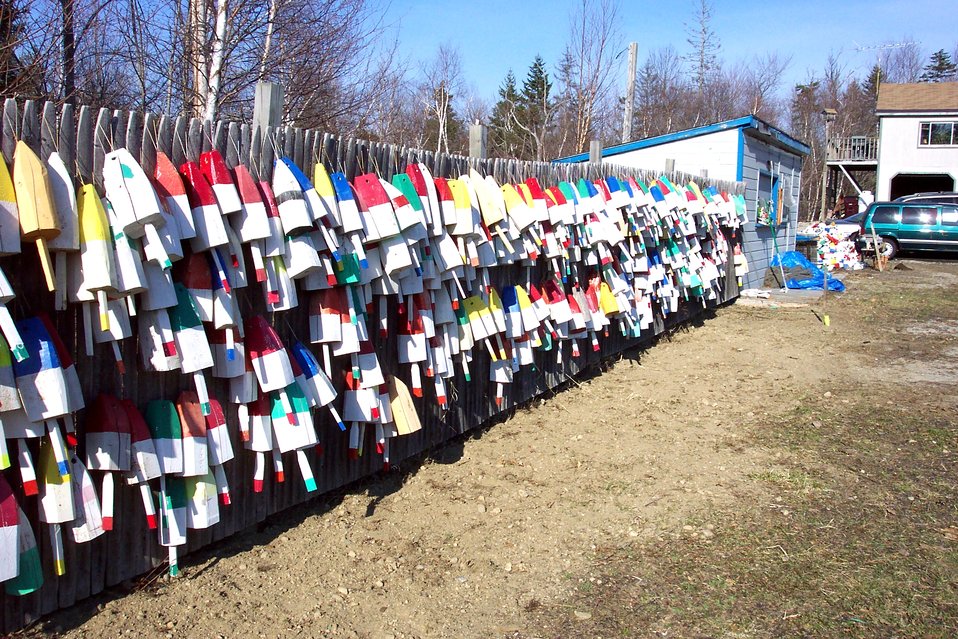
Floats for lobster traps adorning a Maine fence.